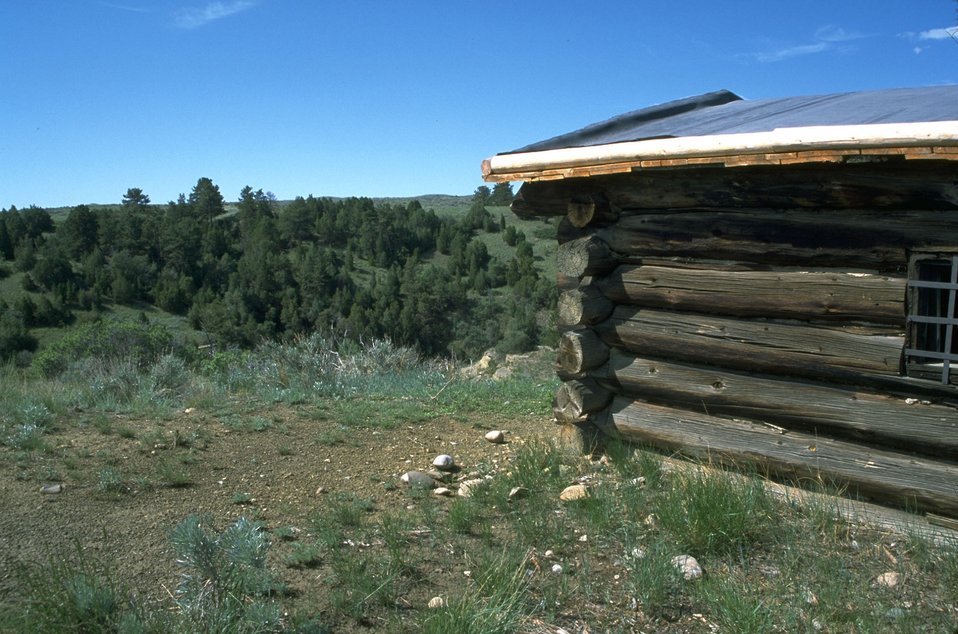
East corner of the Will James log cabin and surrounding area in the Four Dances Natural Area